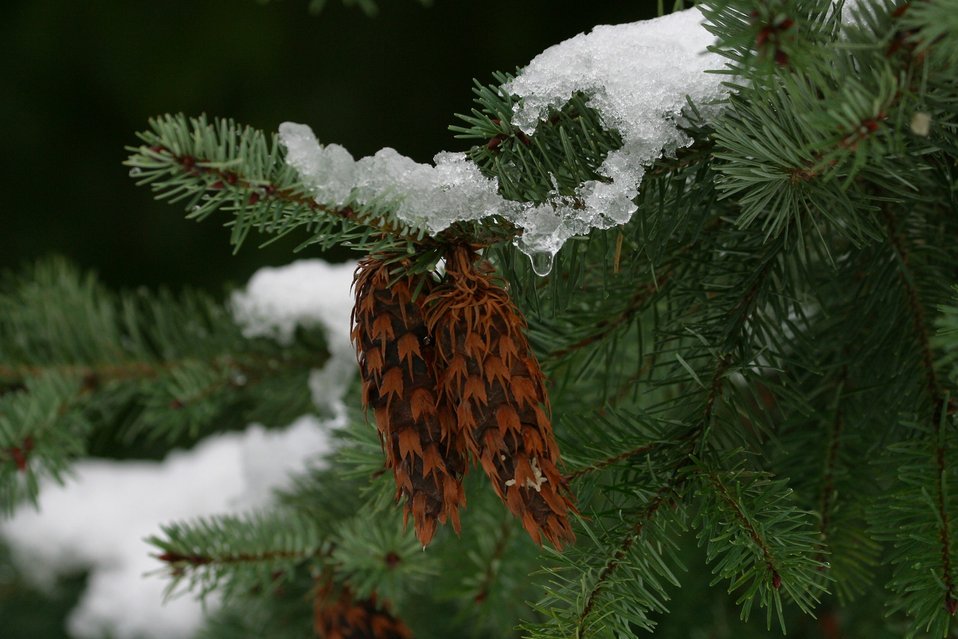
Snow and ice on Douglas Fir Bows and cones during the storm of January 2004.